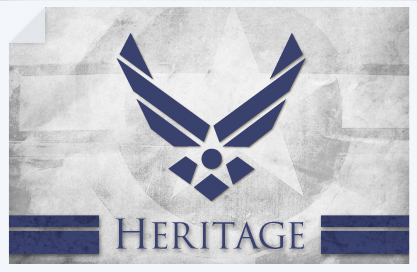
Air Force Heritage

Heritage